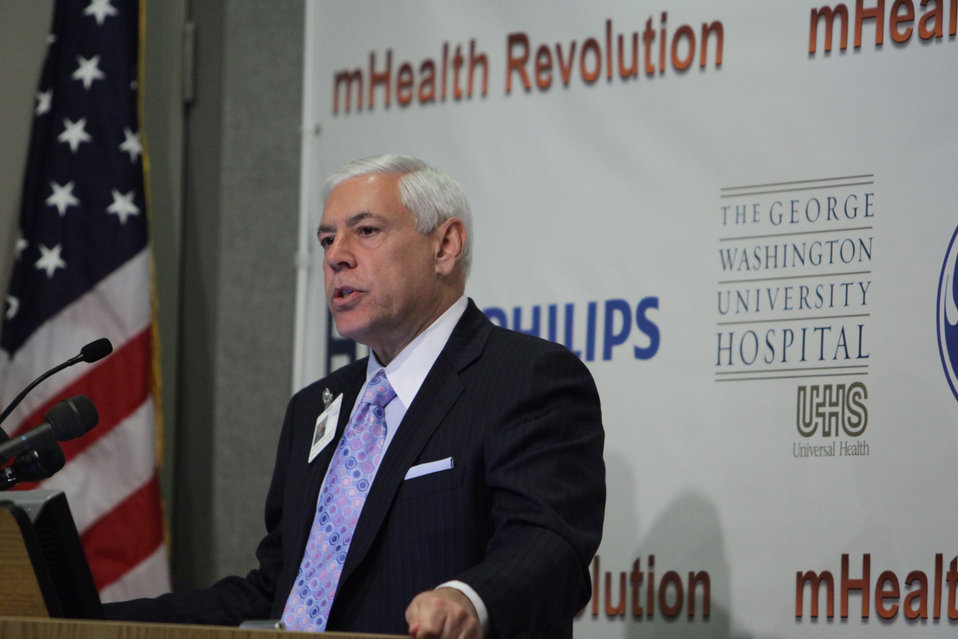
Barry Wolfman Speaks at GW University Hospital About MBANs

Barry Wolfman, CEO & Managing Director, George Washington University Hospital speaks at George Washington University Hospital in Washington, DC.

May 17, 2012.